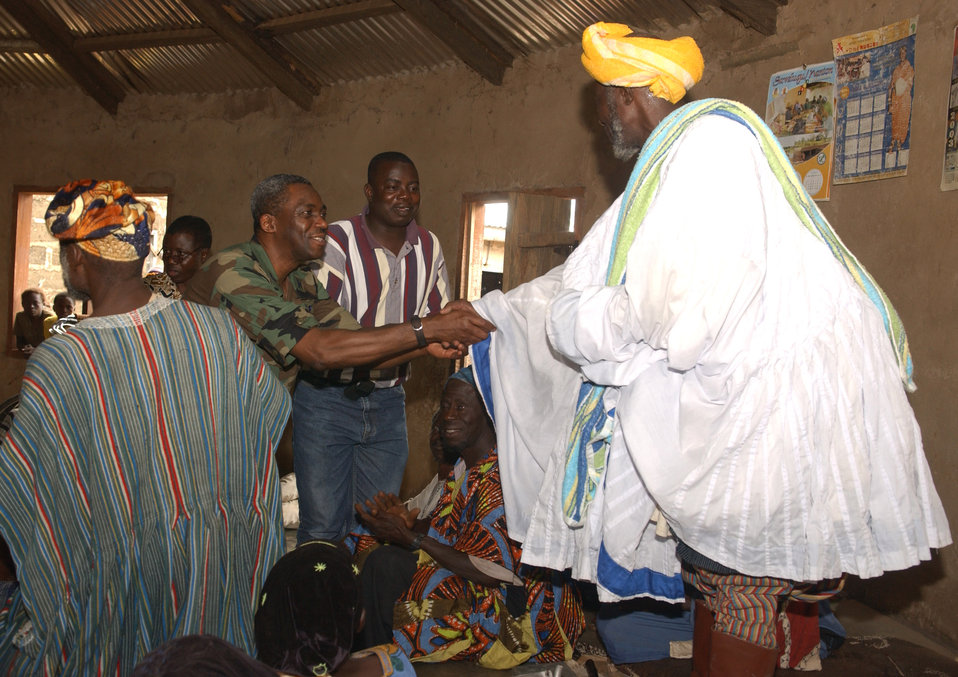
USAFE Airmen support Med Flag 2006 in Ghana

Col. Victor Folarin is welcomed by the Tampion head chief at Med Flag 2006 in Tamale, Ghana, Sept. 12. More than 50 Airmen from United States Air Forces in Europe are participating in the humanitarian medical mission. Colonel Folarin is the commander of the 52nd Medical Group at Spangdahlem Air Base, Germany.